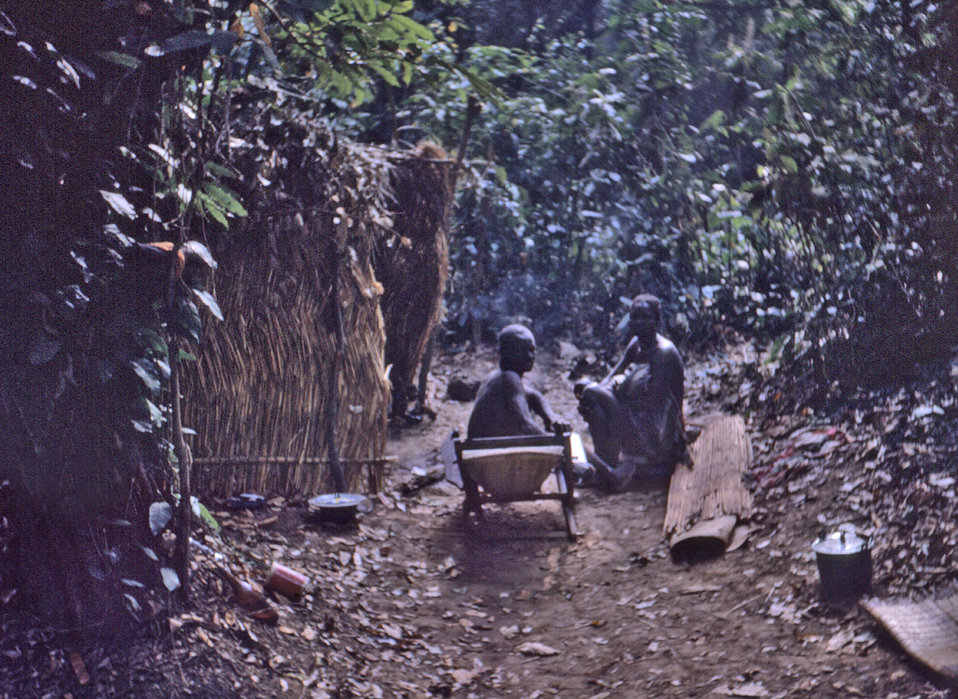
This 1969 photograph depicted a Dekina, Nigerian family as they were seated in front of their home during a smallpox investigation.